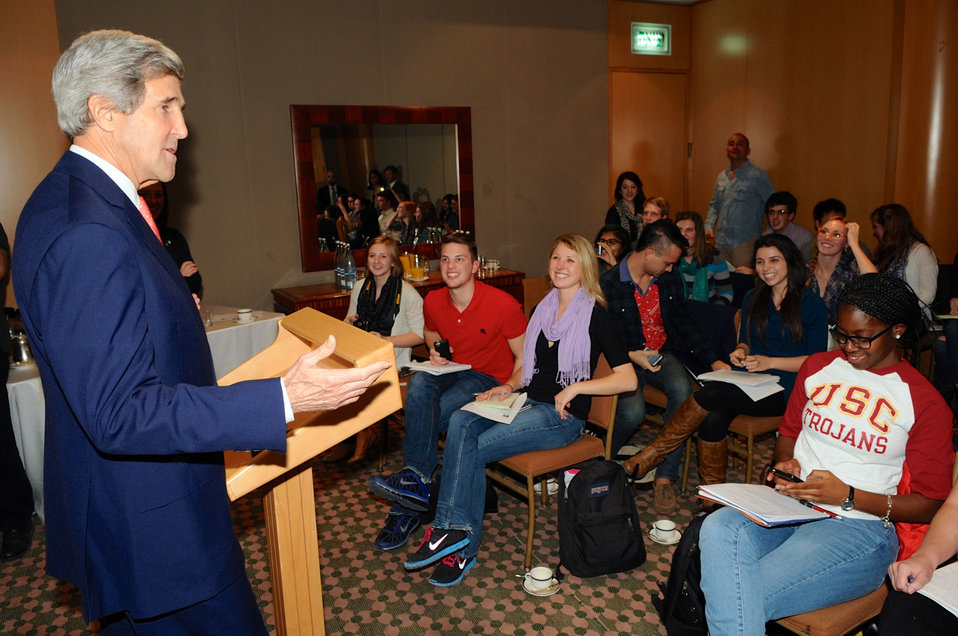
Secretary Kerry Speaks With U.S. College Newspaper Editors in Jerusalem

U.S. Secretary of State John Kerry says a quick hello to a group of U.S. college newspaper editors attending an American Jewish Committee seminar in Jerusalem as he traveled between Israel and the West Bank on January 3, 2014, to engage in Middle East peace talks.